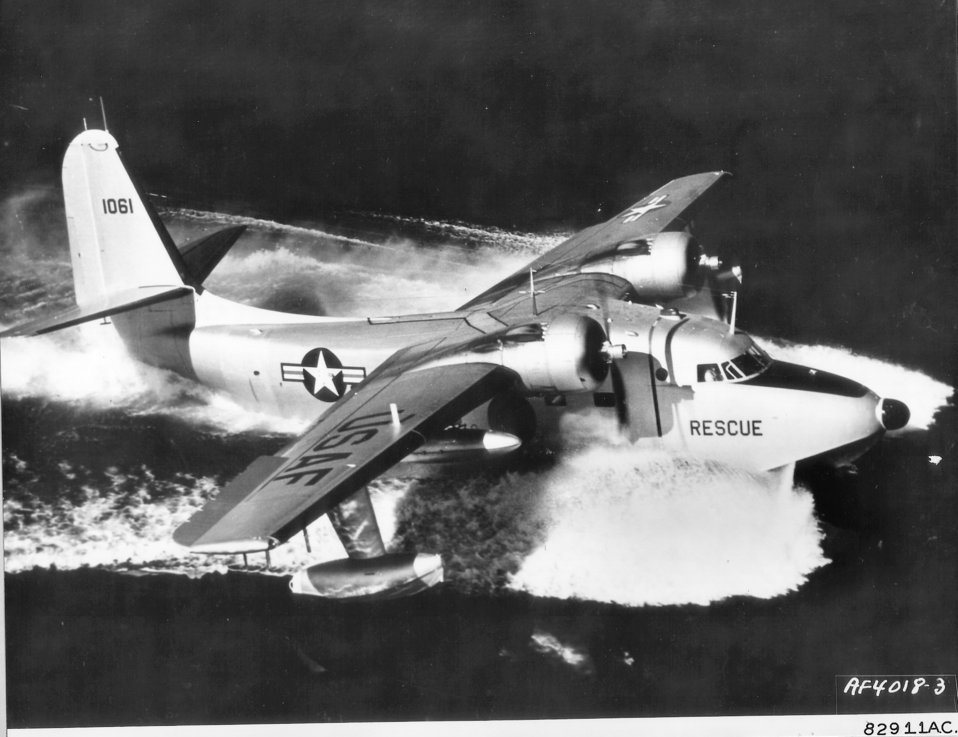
SA-16

1950's -- The white water froths from the nose of an SA-16 as the pilot pours on the power in preparation for a take-off from a fresh water lake in northern Honshu, in Japan. The 38th is a unit of the 3rd Air Rescue Group and provides air and sea rescue for military and civilian air traffic over norther Honshu, Hokkaido and the adjacent Pacific Ocean areas. March 1953